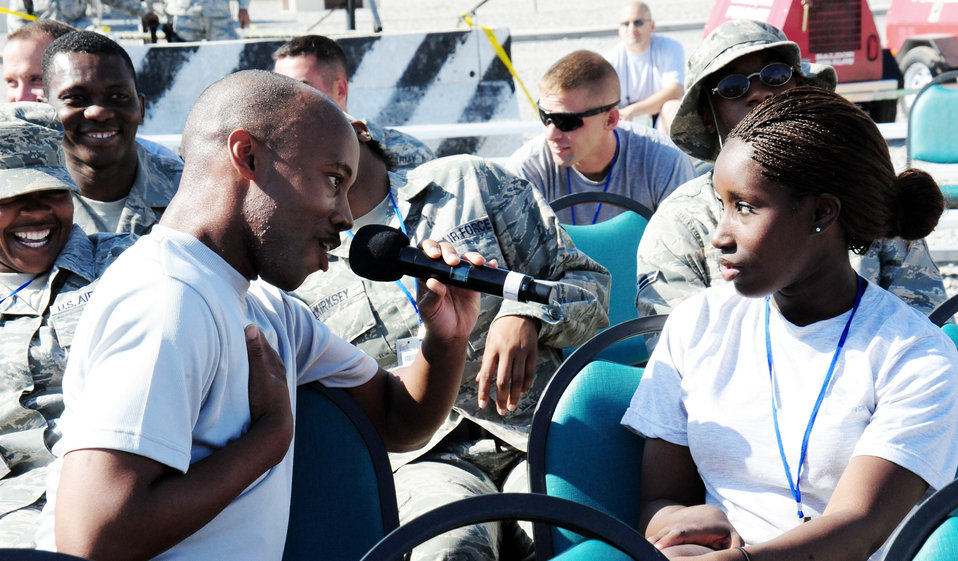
Tops In Blue entertain deployed forces in Kyrgyzstan

Senior Airman Demetrius Johnson sings Rod Stewart's